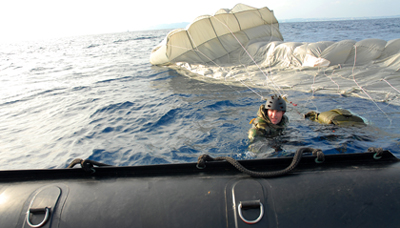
Combat Rescue

Capt. J. Harman from the 31st Rescue Squadron, Kadena Air Base, Japan, swims to the edge of a F470 Zodiac boat after jumping into the warm, blue waters of Okinawa during a weekly training exercise Jan. 16, at the White Beach Naval facility. Pararescuemen participate in their weekly proficiency jump which keeps members current in the proper procedures of rescue and keeps them mission ready.